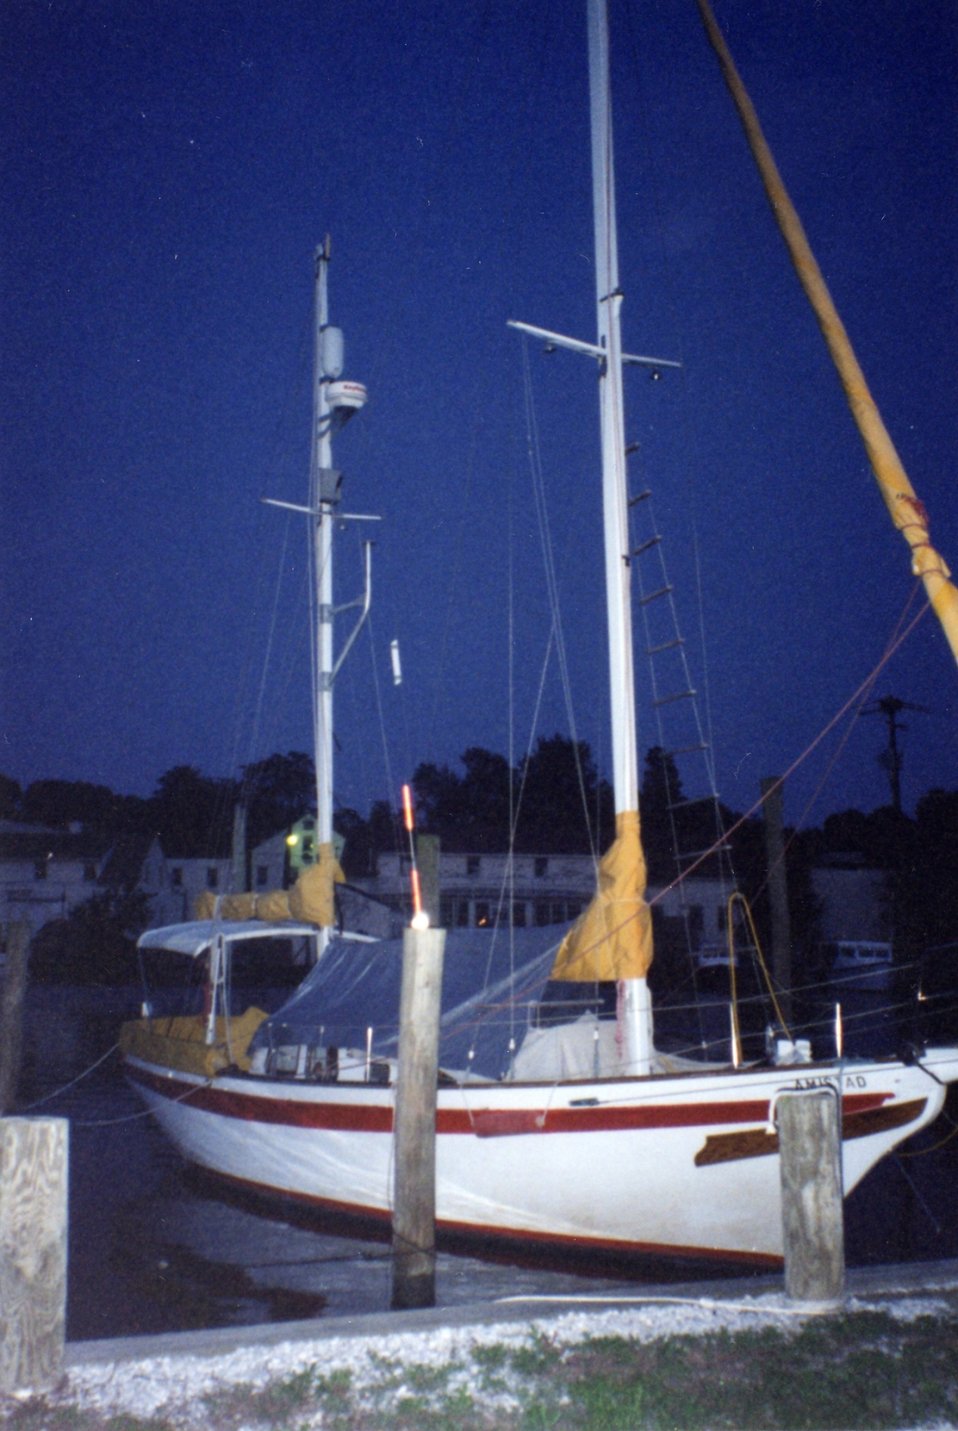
Sailboat at pier along the South River.